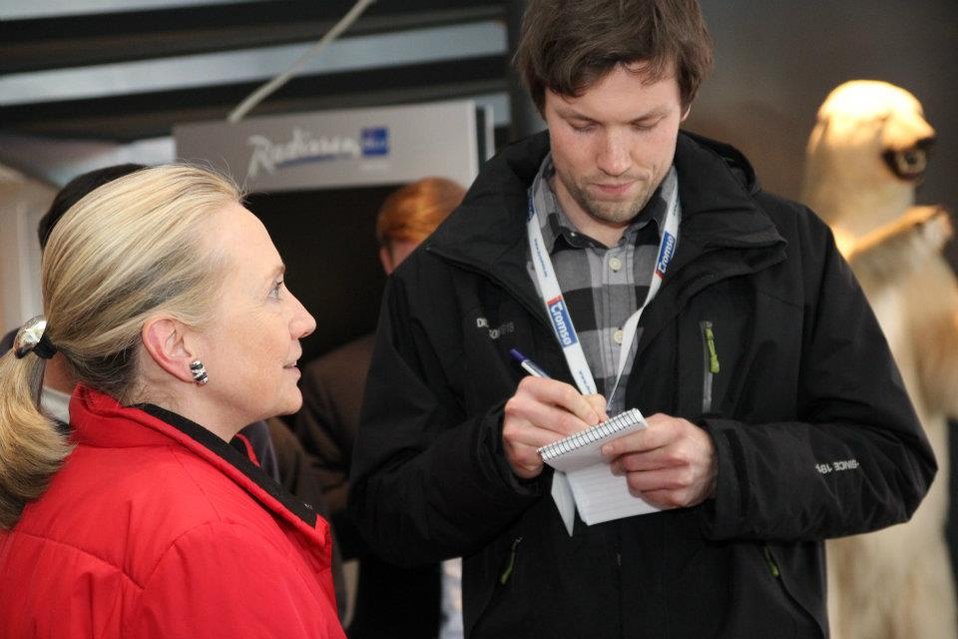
Secretary Clinton Is Interviewed By a Norwegian Journalist

U.S. Secretary of State Hillary Rodham Clinton participates in an interview with a local Norwegian journalist in Tromso, Norway, on June 1, 2012.